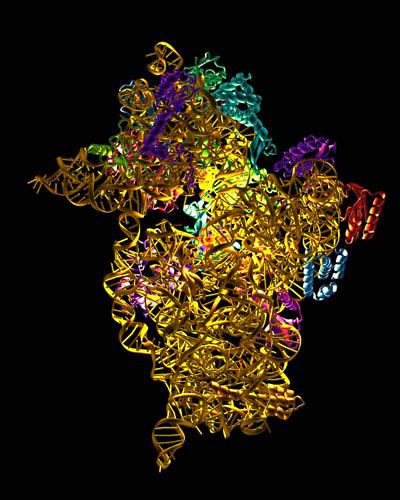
MODEL OF THE SMALL 30S SUBUNIT OF THE RIBOSOME MOLECULE.

THIS MODEL OF THE SMALL 30S SUBUNIT OF THE RIBOSOME MOLECULE, NATURE'S PROTEIN FACTORY, IS BASED ON DATA GATHERED AT ARGONNE'S ADVANCED PHOTON SOURCE.